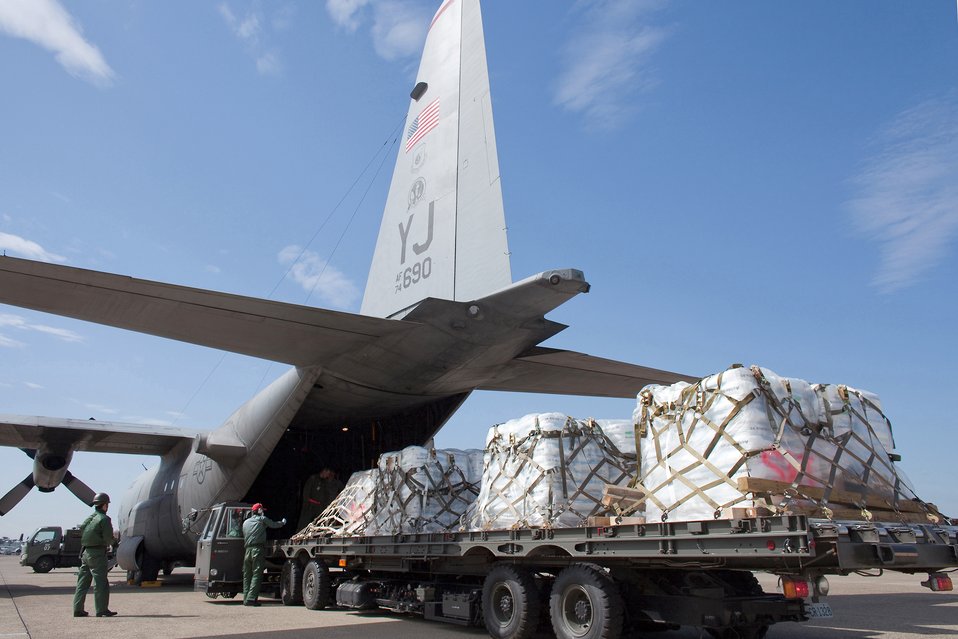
Airmen deliver boron

Japan Air Self-Defense Force members unload pallets of boron from a C-130 Hercules March 19, 2011, at Hyakuri Air Base, Japan.